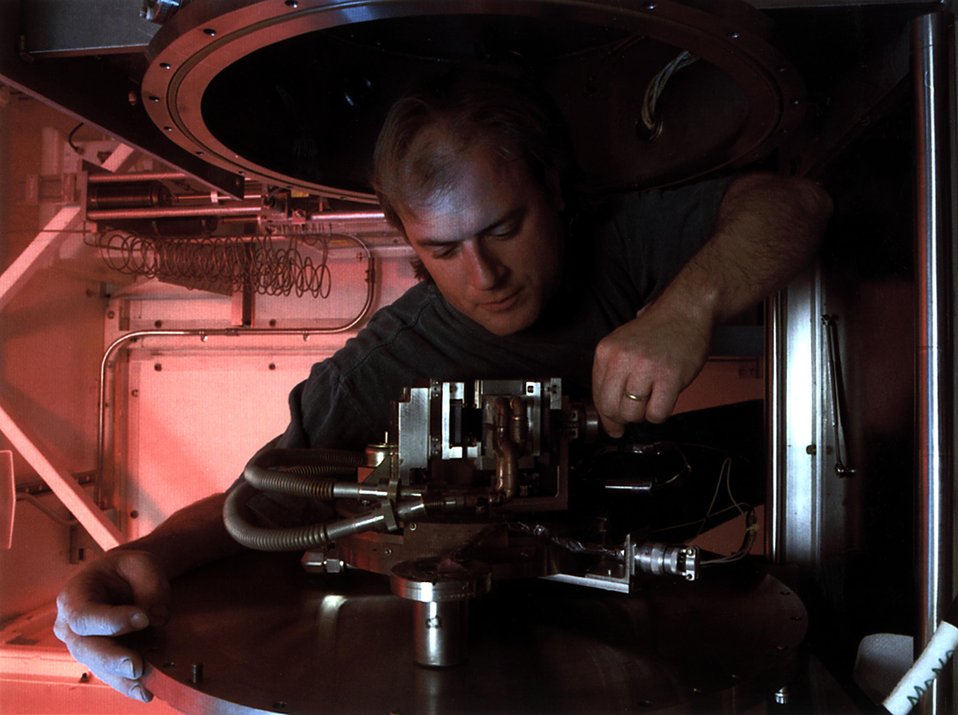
SCIENTIST WORKING ON A DOUBLE CRYSTAL MONOCHROMATOR.

SSRL IS A DIVISION OF SLAC DEVOTED TO RESEARCH USING SYNCHROTRON RADIATION, THE ELECTROMAGNETIC RADIATION EMITTED WHEN CHARGED PARTICLES TRAVEL IN CURVED PATHS. SSRL IS FUNDED BY DOE AS A NATIONAL USER FACILITY. THERE ARE 26 EXPERIMENTAL STATIONS ON 10 MAIN BEAM LINES ON THE 3 GEV STORAGE RING SPEAR, MAKING IT POSSIBLE FOR 26 EXPERIMENTS TO RUN AT THE SAME TIME.